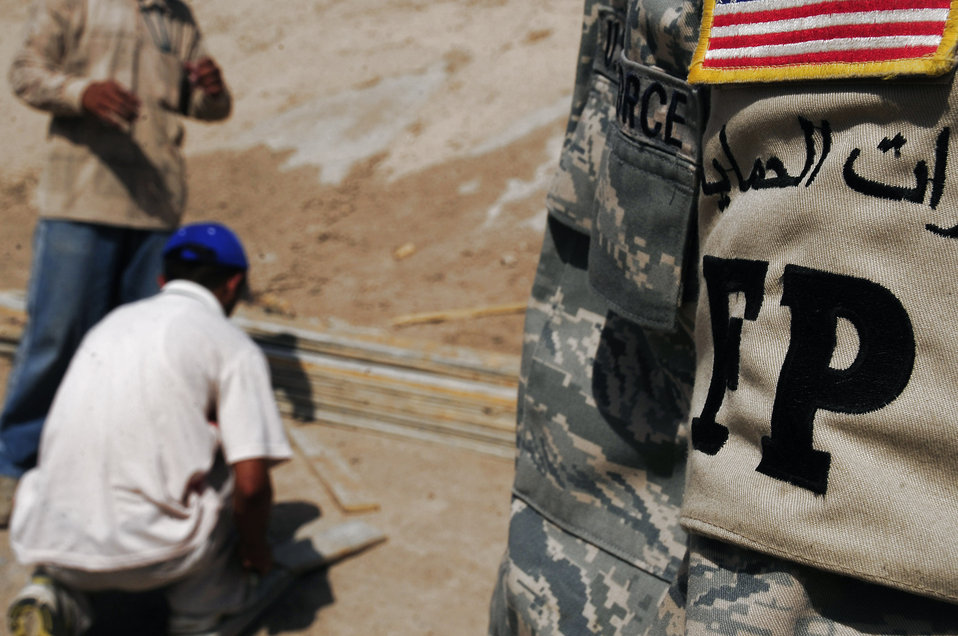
Laying Down the Force at Ali

Airman 1st Class Charles Boyd, watches third country nationals as they work here July 24. Airmen working in the 407th ESFS Force Protection Section are tasked with maintaining the installation's internal safety. Airman Boyd is deployed from the 65th Air Base Wing, Lajes Field, Azores, where he is a radar maintainer. Airman Boyd is assigned to the 407th Expeditionary Security Forces Squadron.